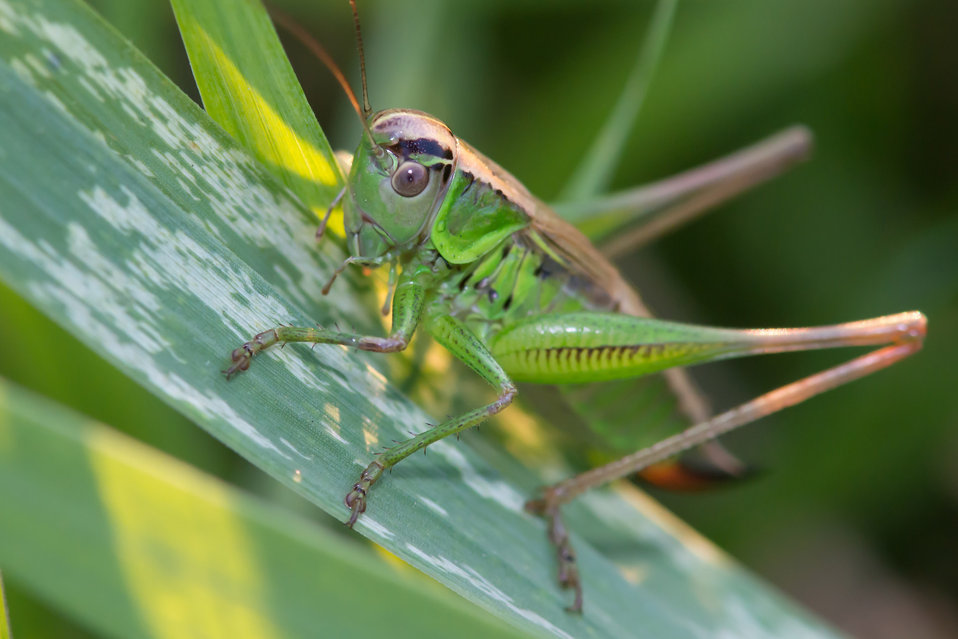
Grasshopper (ensifera).